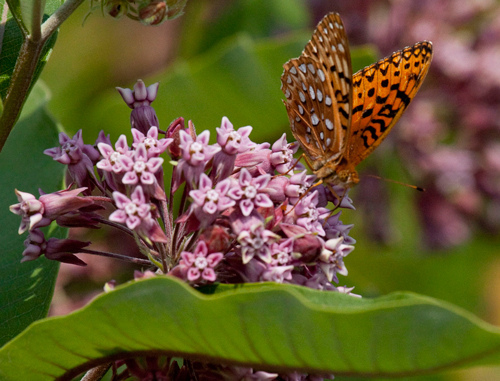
Aphrodite Fritillary on Milkweed Flower

An Aphrodite Fritillary nectars on a milkweed plant off the Beall Trail.